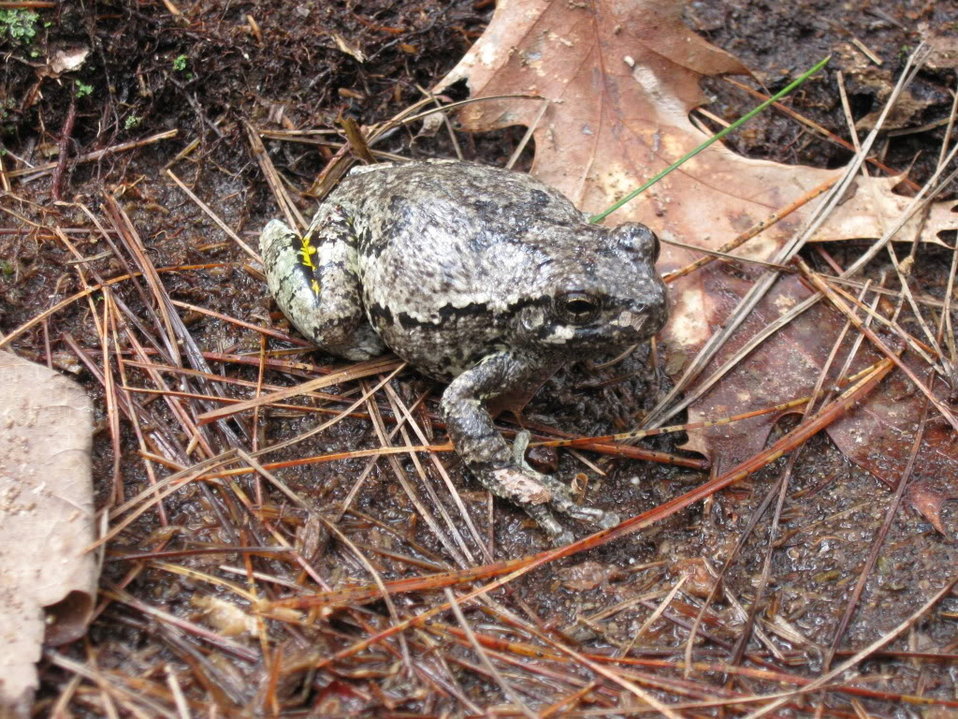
Gray treefrog at Assabet River National Wildlife Refuge.

Credit: Zachary Cava/USFWS

Assabet River National Wildlife Refuge is part of the Eastern Massachusetts National Wildlife Refuge Complex.